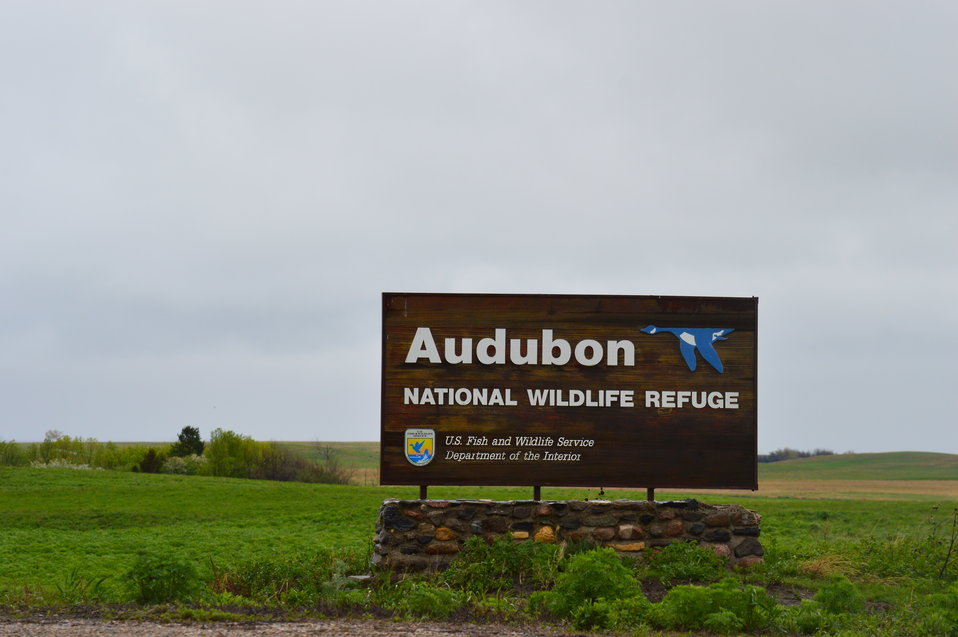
Audubon NWR sign

Scenery and wildlife and Audubon National Wildlife Refuge in North Dakota.